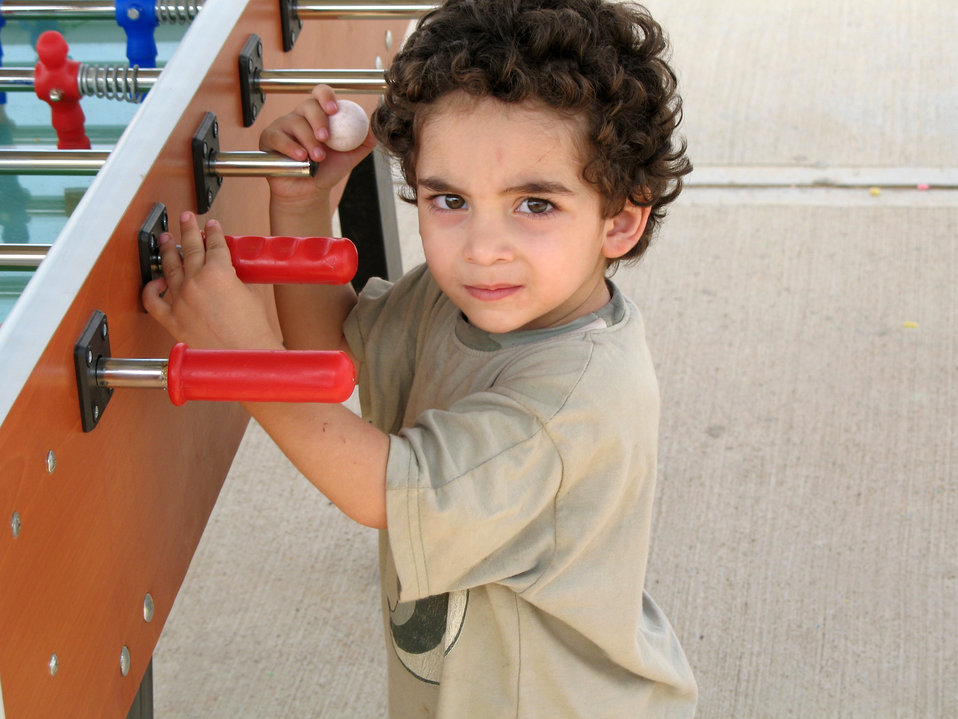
Care and comfort at Incirlik

A young American who departed Lebanon plays with a foosball table at Incirlik Air Base, Turkey, on July 22. The base has provided telephones, Internet service, television, beds and showers to the displaced American citizens while they wait to travel to the United States.